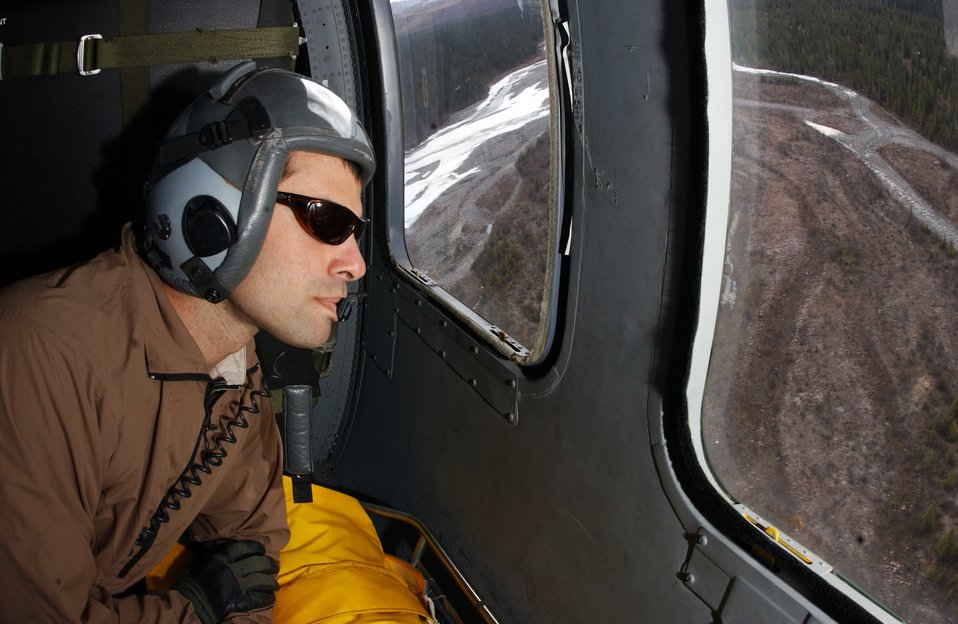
Keeping an eye on gas

Master Sgt. Jon Davis scans the terrain for suspicious activity over the Trans-Alaska Pipeline System May 10 during Northern Edge. The exercise is designed to practice operations, techniques and procedures, and enhance interoperability among all the services and civilian emergency response teams. Sergeant Davis is a pararescueman assigned to Det. 1, 210th Rescue Squadron, at Eielson Air Force Base, Alaska.